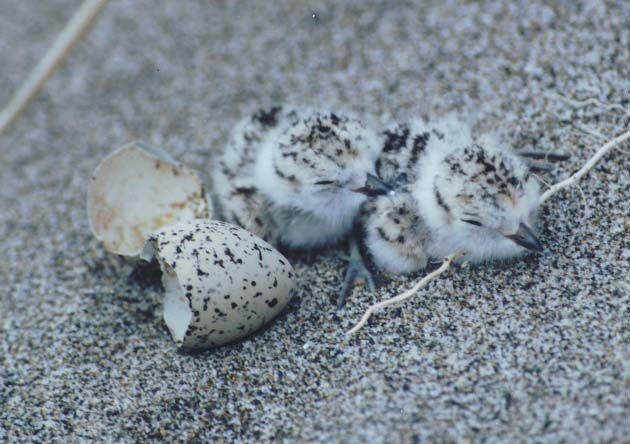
Wester Snowy Plover chicks with eggshells on sand